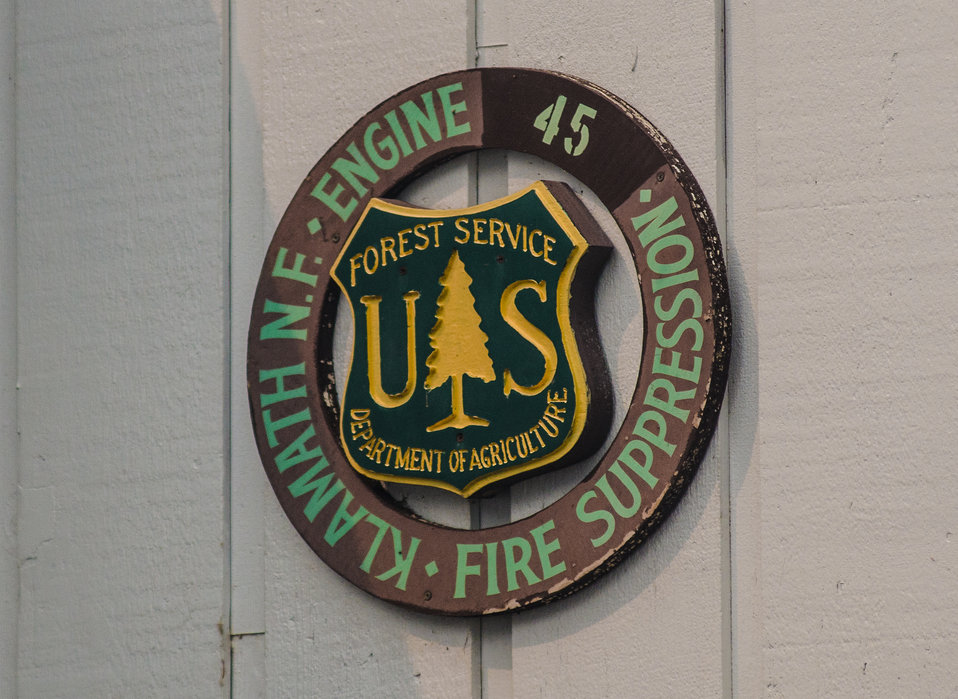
The Klamath National Forest Fire Suppression Engine 45 is based in Sawyers Bar, CA to help protect the community in this deeply wooded region of Northern California, near the Salmon River Complex Wildlands Fire, northwest of Sawyers Bar and west of Etna and Yreka, CA, on Wednesday, Aug. 6, 2013.